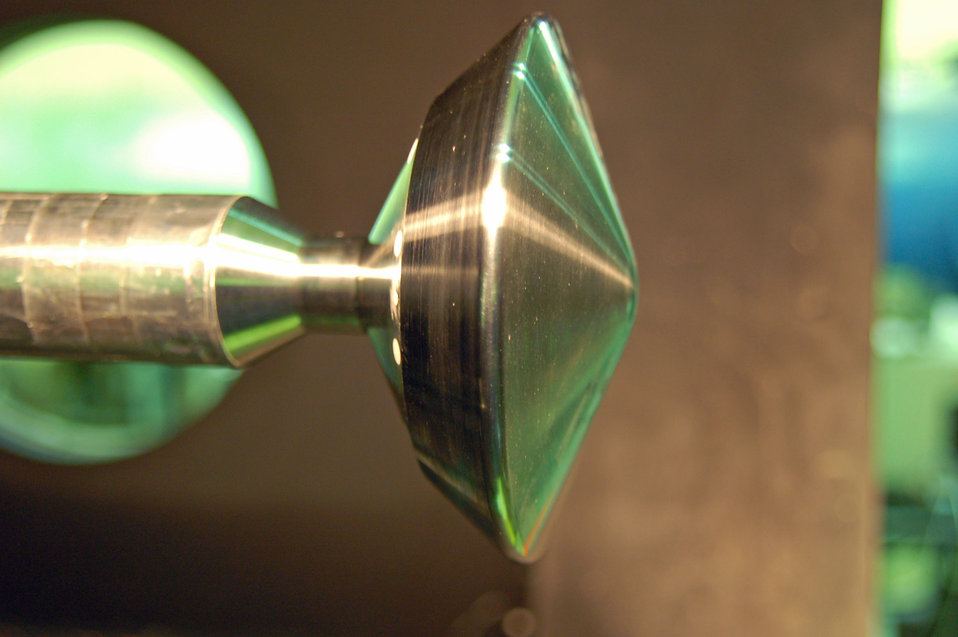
Mars Rover

A 1/30-scale model of the aeroshell configuration for the Mars Science Laboratory underwent aerodynamic atmospheric descent testing at AEDC’s Hypervelocity Wind Tunnel 9 Facility.